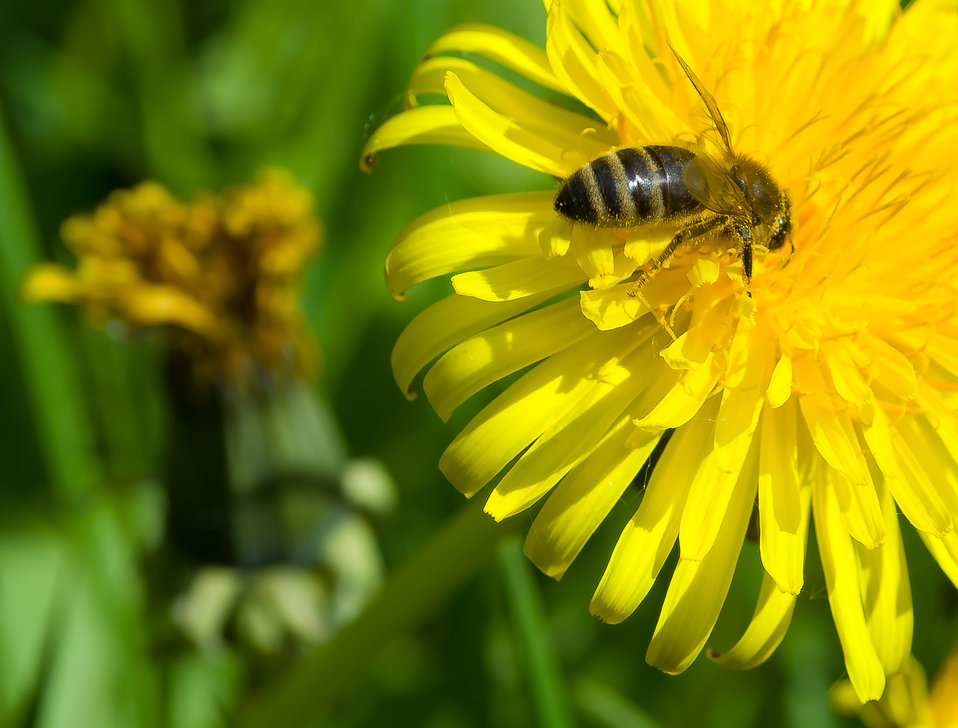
Bee on dandelion.